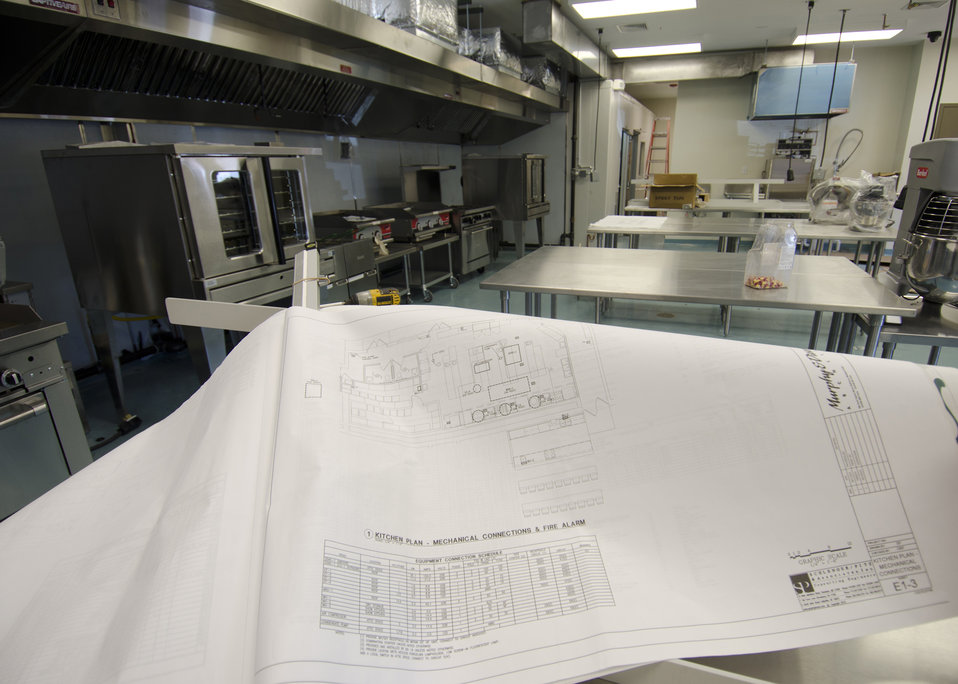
YorKitchen is a shared incubator kitchen that received partial funding through the U. S. Department of Agriculture’s (USDA) Rural Development (RD) Rural Business Enterprise Grant (RBEG) program. This program provides grants for rural projects that finance and facilitate development of small and emerging rural businesses, distance- learning networks, and employment related adult education programs. YorKitchen is a commercially equipped and fully licensed kitchen in which new entrepreneurs can prepare new products without the associated start up costs. This “incubator kitchen” provides full business support to include invoicing, accounting, advertising, outreach, and marketing for entrepreneurs. The YorKitchen is housed in the annex of Central Market in York, PA. This location offers local agricultural producers increased opportunities to develop new value-added products with their produce.